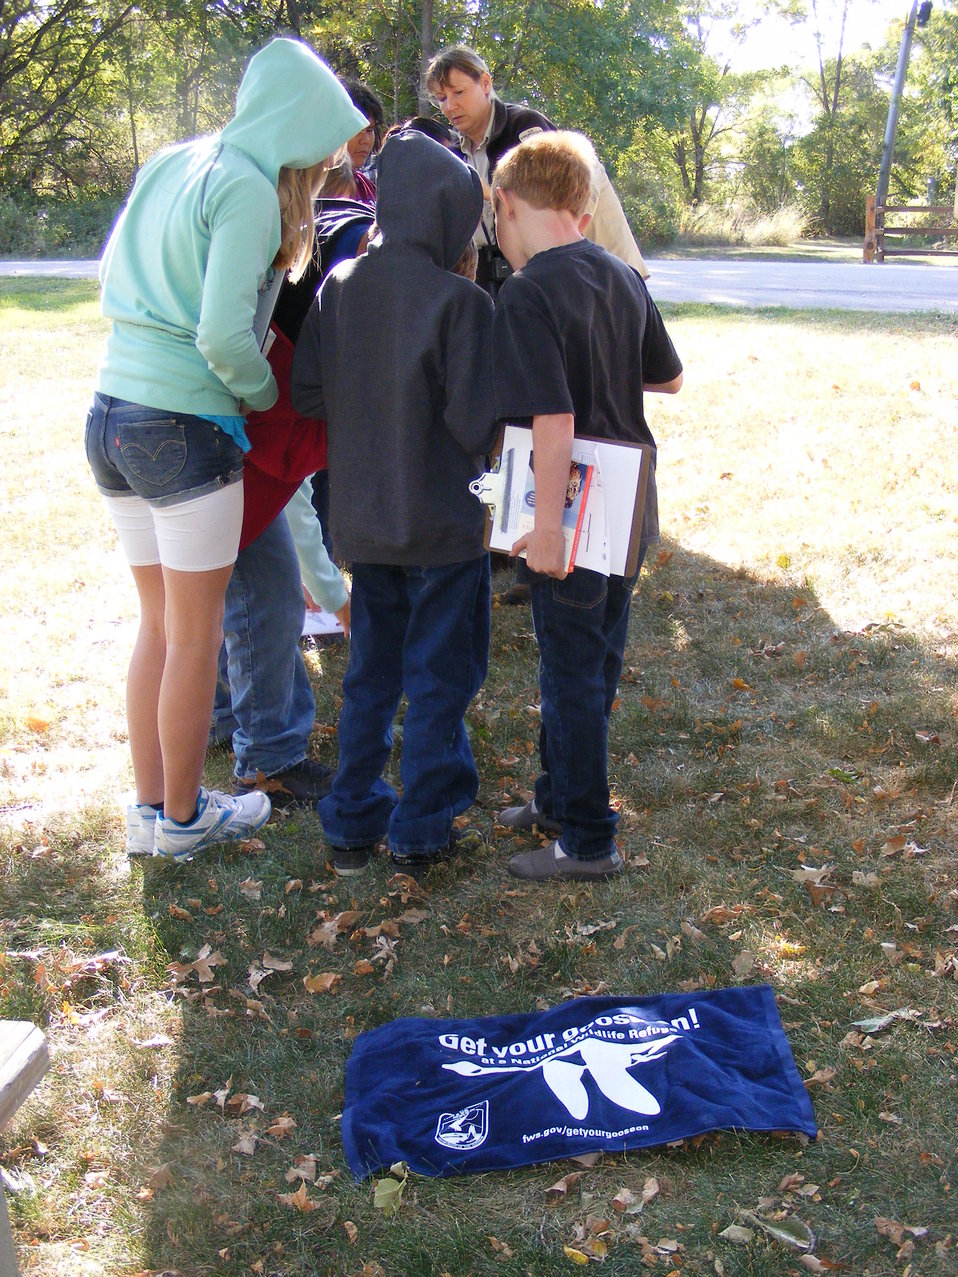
Get Your Goose On!

Youngsters participate in a birding hike at Waubay National Wildlife Refuge in South Dakota.